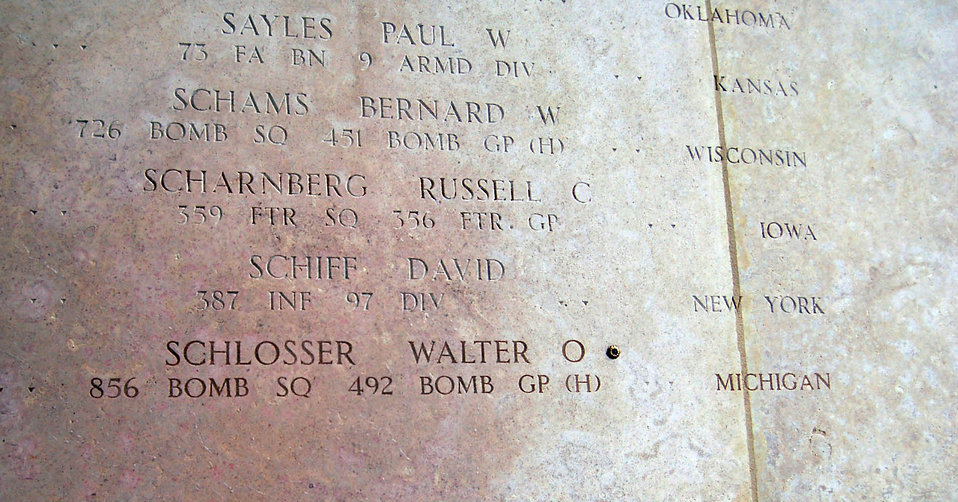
World War II MIAs recovered in Germany

The rosette next to Staff Sgt. Walter O. Schlosser's engraved name signifies he is no longer missing in action. Sergeant Schlosser was part of the McMurray Crew, which flew the B-24 bomber during World War II. The remains of the crew and parts of their aircraft were discovered in a field southwest of Berlin in 2002.